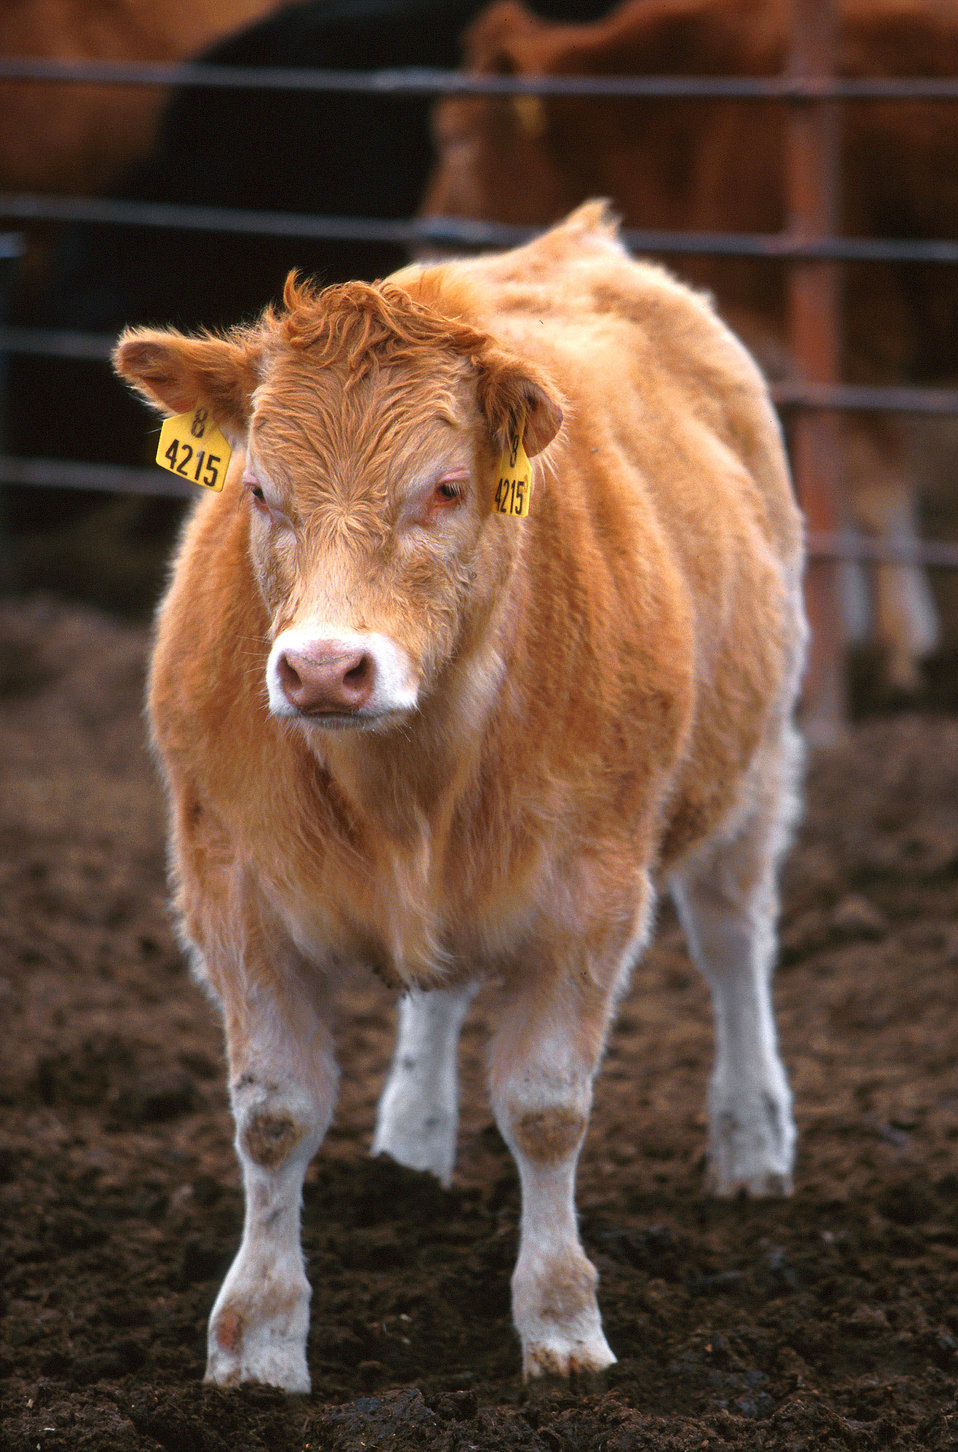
This Piedmontese-Hereford crossbred calf displays classic double muscling because it inherited a defective myostatin gene from both of its parents on Apr. 23, 2004.